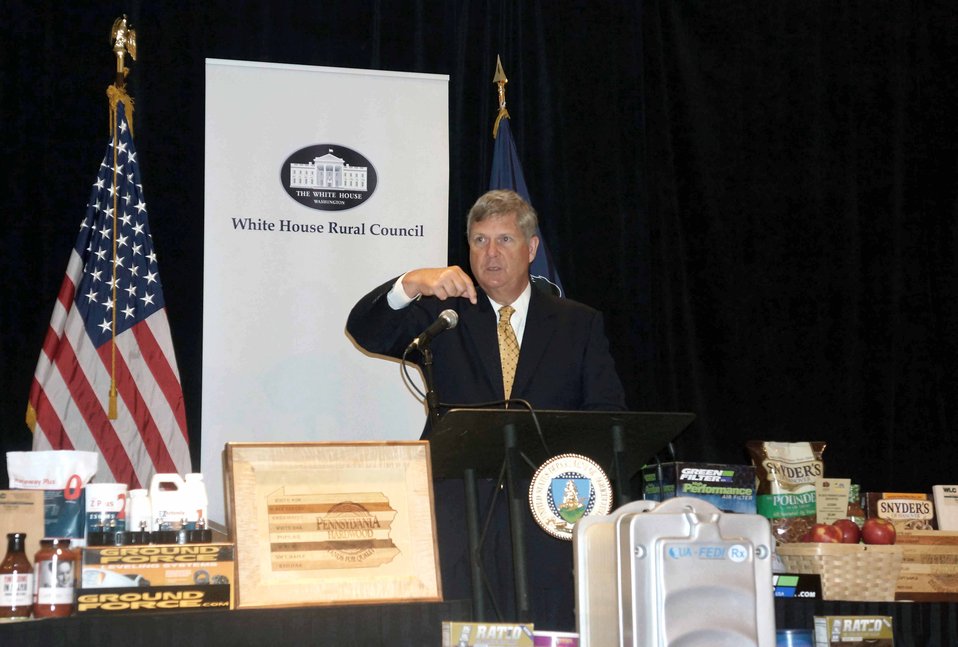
Agriculture Secretary Tom Vilsack makes Keynote Inaugural address at the “Made in Rural America Regional Forum” in Canonsburg, PA on Jun. 4, 2014. Secretary Tom Vilsack explained that 98% of U.S. Exporters are small and medium size businesses and stated, “Your business is not too small to export.”